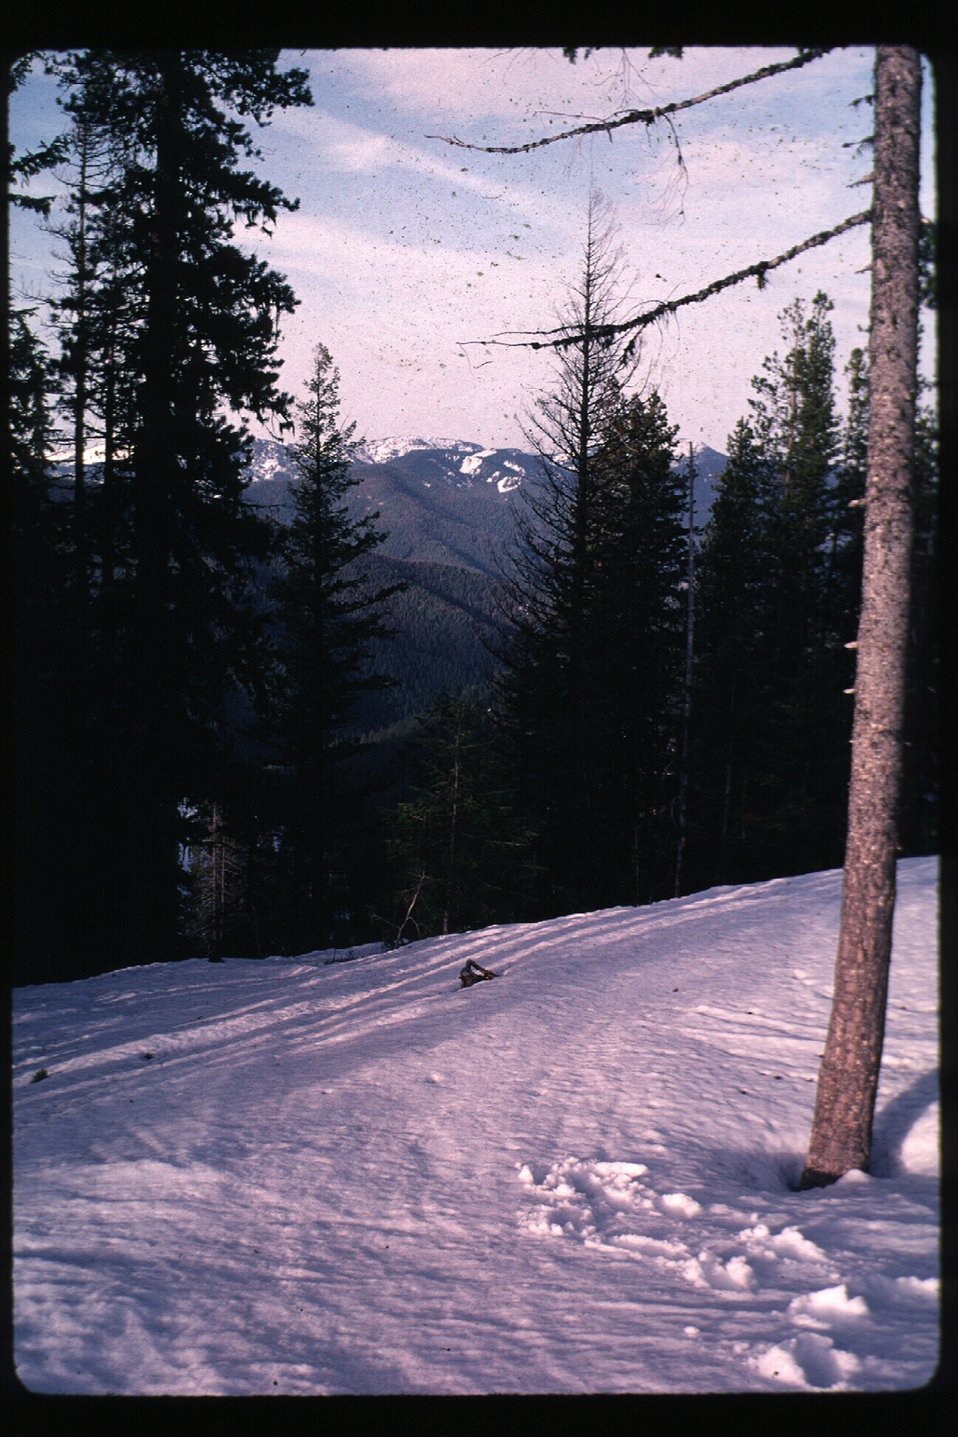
Snow in winter Couer d'Alene Field Office UCSC Upper Columbia Salmon Clearwater District